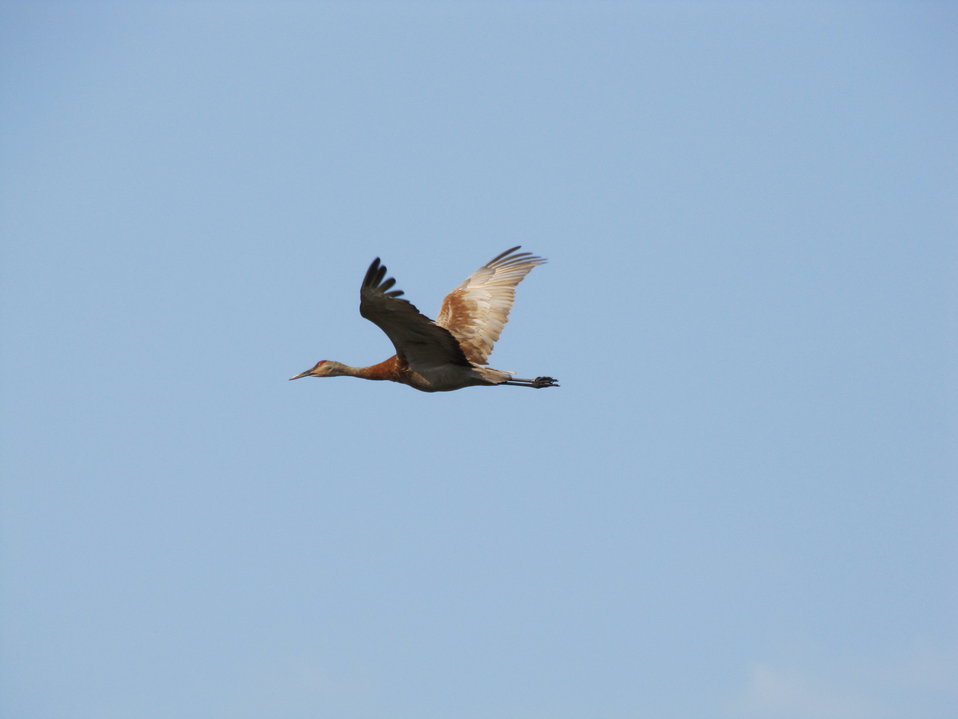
Flying Crane

We welcome our Sand Hill cranes back to the Refuge this spring after migrating from Southern Geogia and Northern Florida. The Sand Hill crane is always a favorite among visitors here at the Refuge!